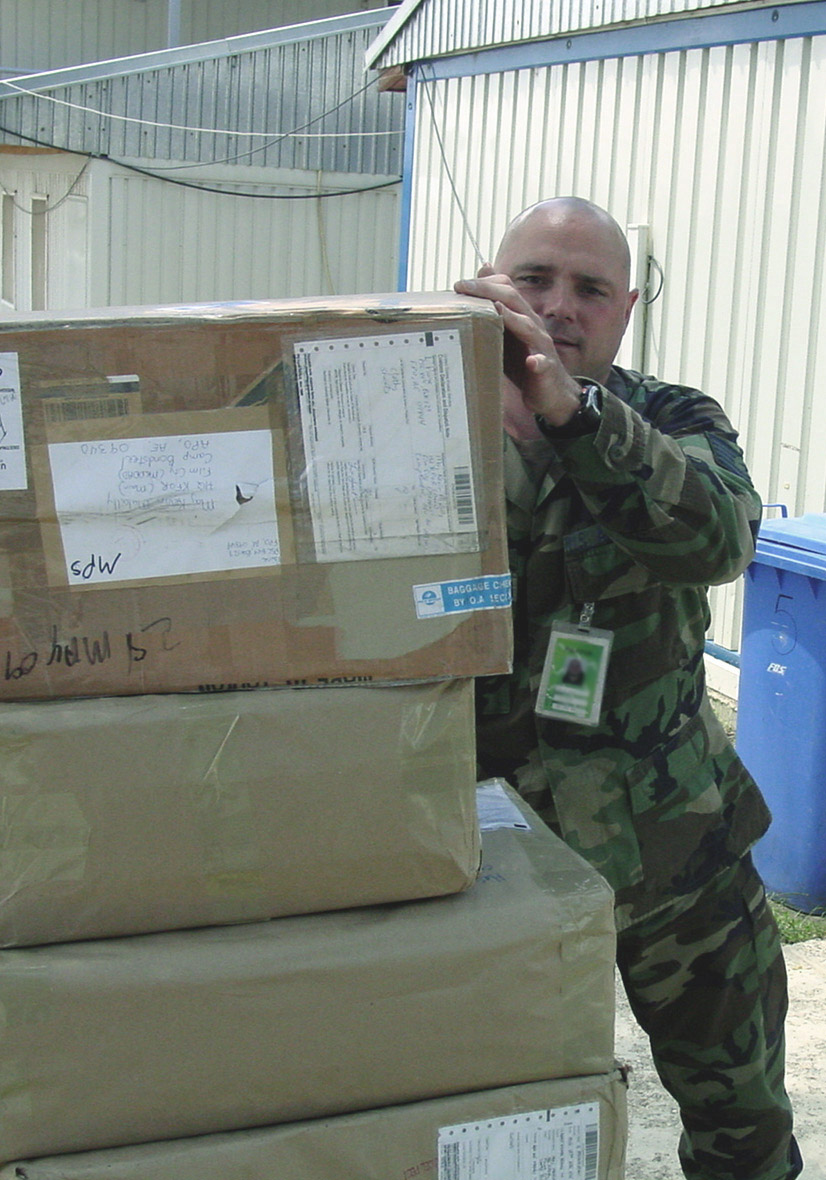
'American family' supports NATO, humanitarian effort

PRISTINA, Kosovo -- Tech. Sgt. Dennis Cool stacks some of the more than 80 boxes headed for a children's shelter here June 27. Sergeant Cool is an automated data processing maintenance chief at Kosovo Force headquarters and is deployed from Joint Command South Centre in Larissa, Greece.